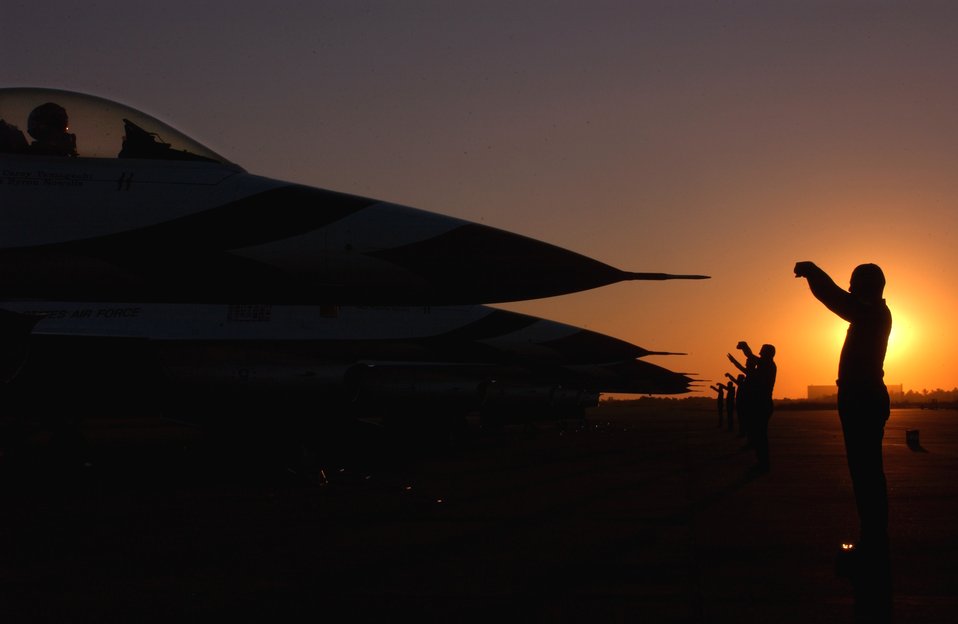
Parked

ACAPULCO, Mexico -- Crew chiefs from the U.S. Air Force Air Demonstration Squadron,